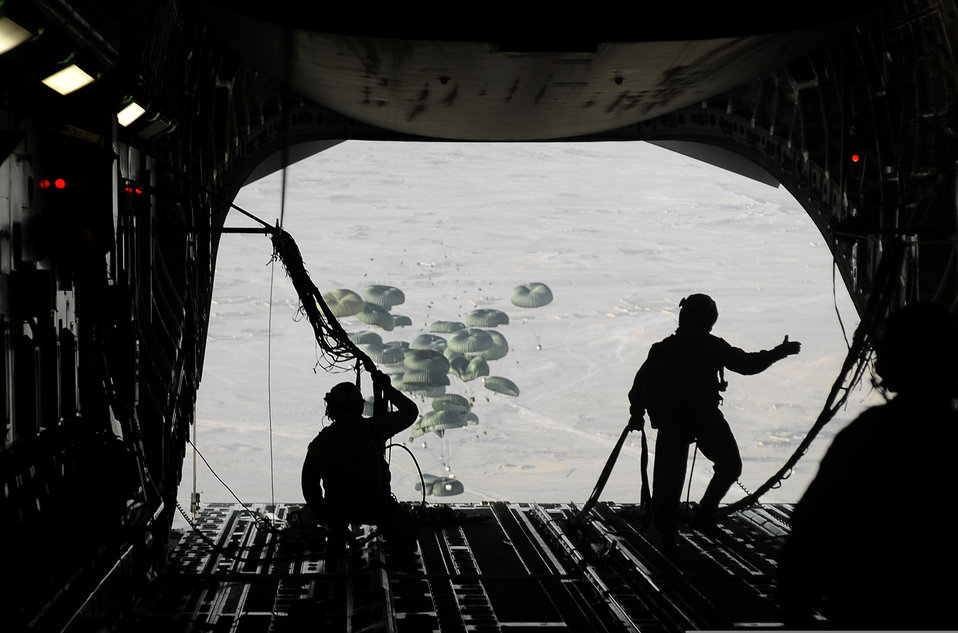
Mobility Airmen continue peak pace for Operation Enduring Freedom

Air Force loadmasters assigned to the 816th Expeditionary Airlift Squadron conduct an airdrop from a C-17 Globemaster III aircraft Sept. 2, 2009, over the southern region of Afghanistan. Pallets are being airdropped to provide needed supplies to ground personnel.